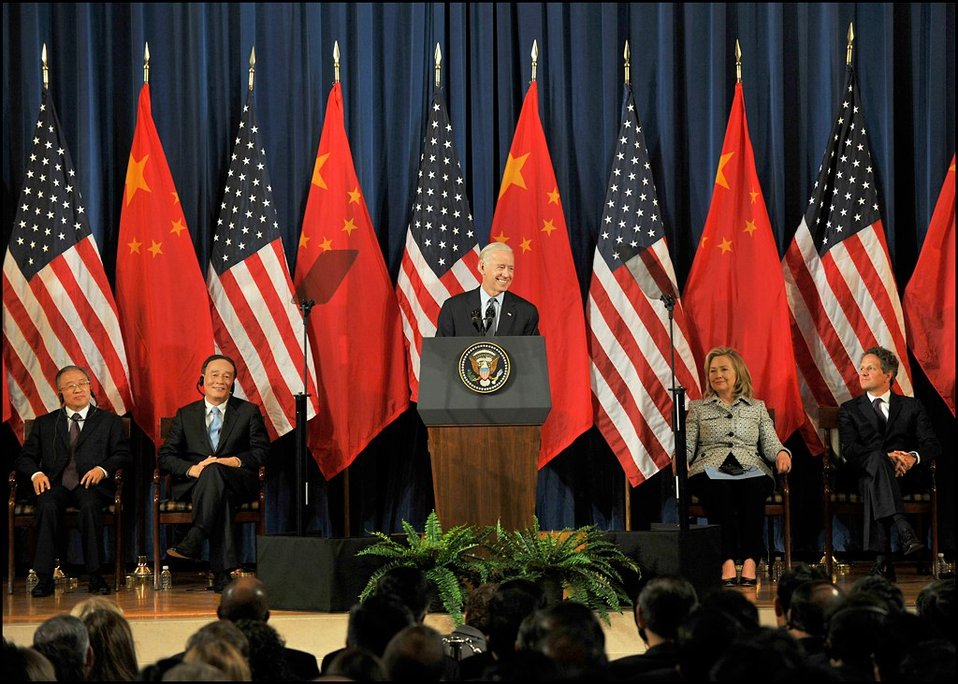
U.S.-China Strategic and Economic Dialogue

Vice President Joe Biden speaks at the conclusion of the opening session of the third U.S.-China Strategic & Economic Dialogue at the Department of Interior. (L to R) Chinese State Councilor Dai, Chinese Vice Premier Wang, Secretary of State Clinton and Secretary of the Treasury Geithner also delivered remarks.